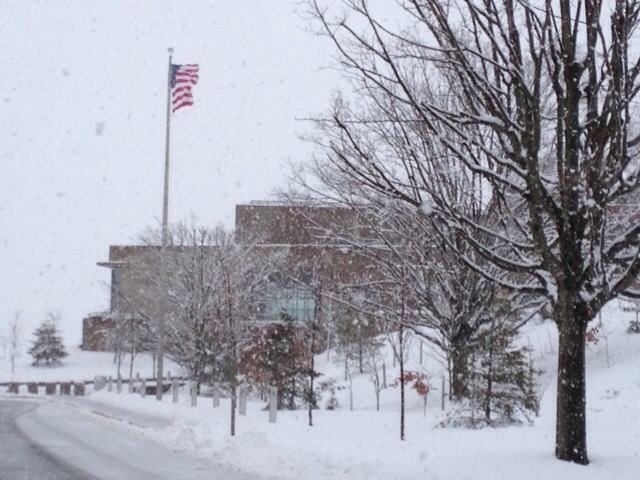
Library of Congress Packard Campus Snow March 6, 2013